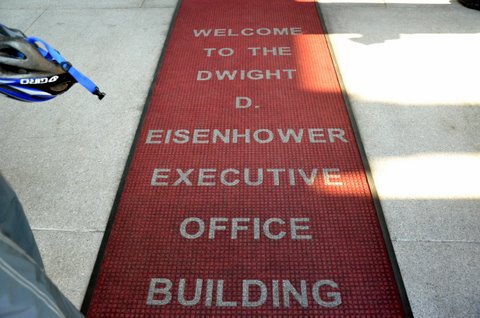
Old Executive Office Bldg

WH 2012 World Hepatitis Day Event